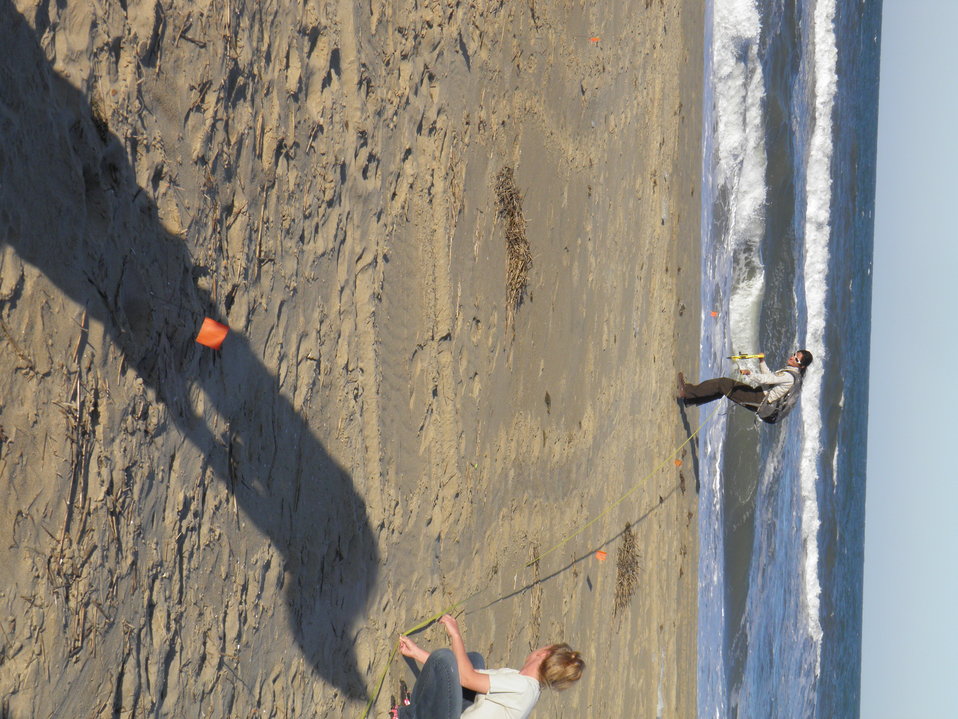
Measuring length of the tracks

Credit: USFWS
Crawl 3, Nest 3